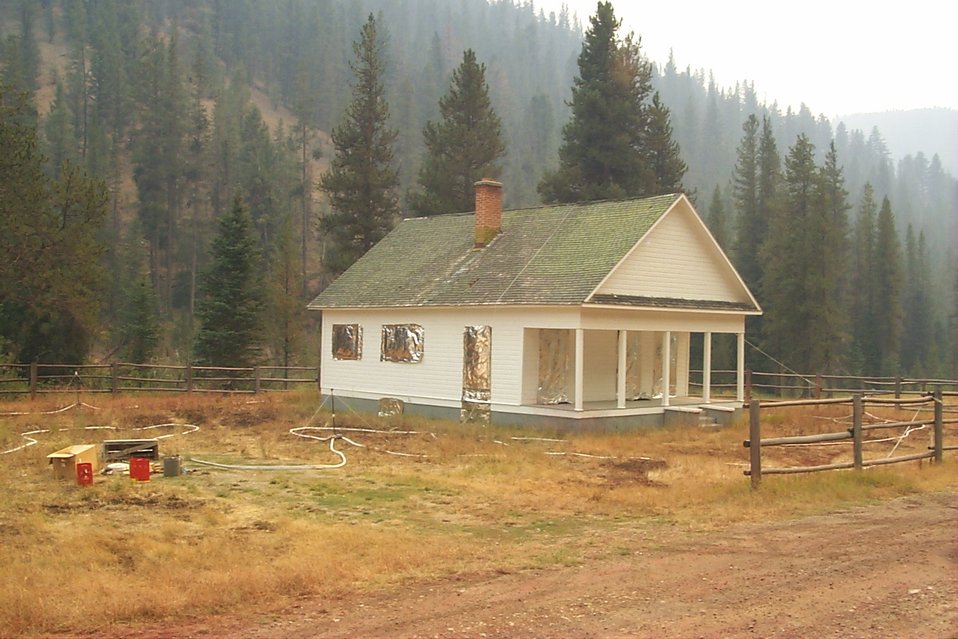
Fire retardant measures Urban interface Fire Clearwater Fire Salmon Field Office USRD Upper Snake River District